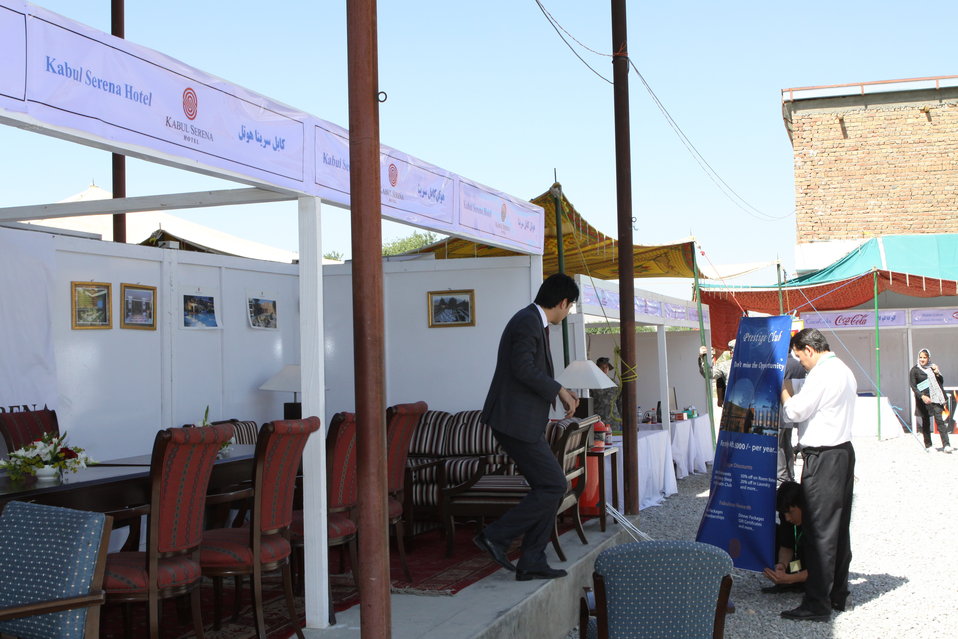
100522 ATVI Graduation 010